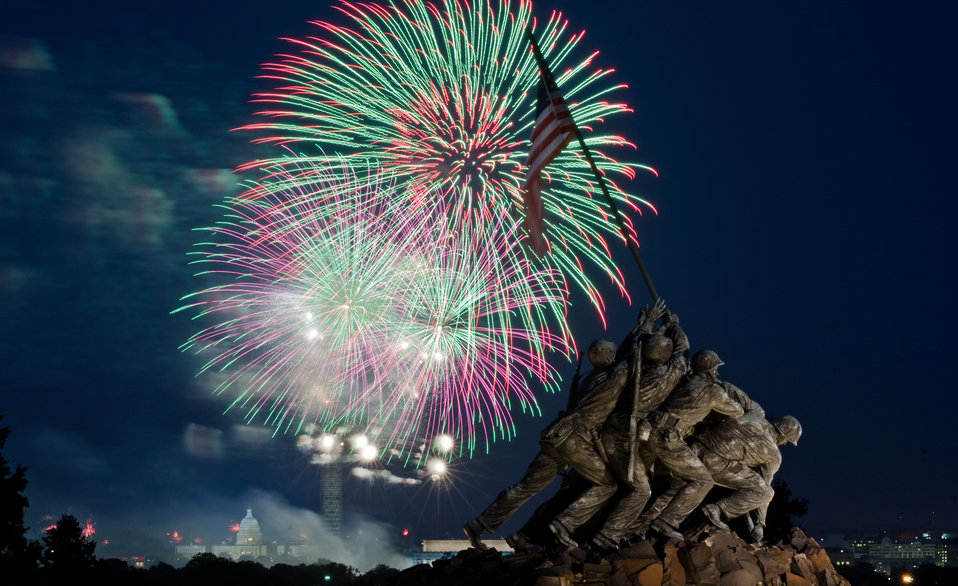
Independence Day celebration fireworks are seen from the Iwo Jima, U.S. Marine Corps Memorial in Arlington, VA on Jul. 4, 2013. In the distance are the Lincoln Memorial, the U.S. Department of Agriculture (USDA) Yates Building (dark red brick building), the Washington Monument (with scaffolding), and the U.S. Capitol building in Washington, D.C.